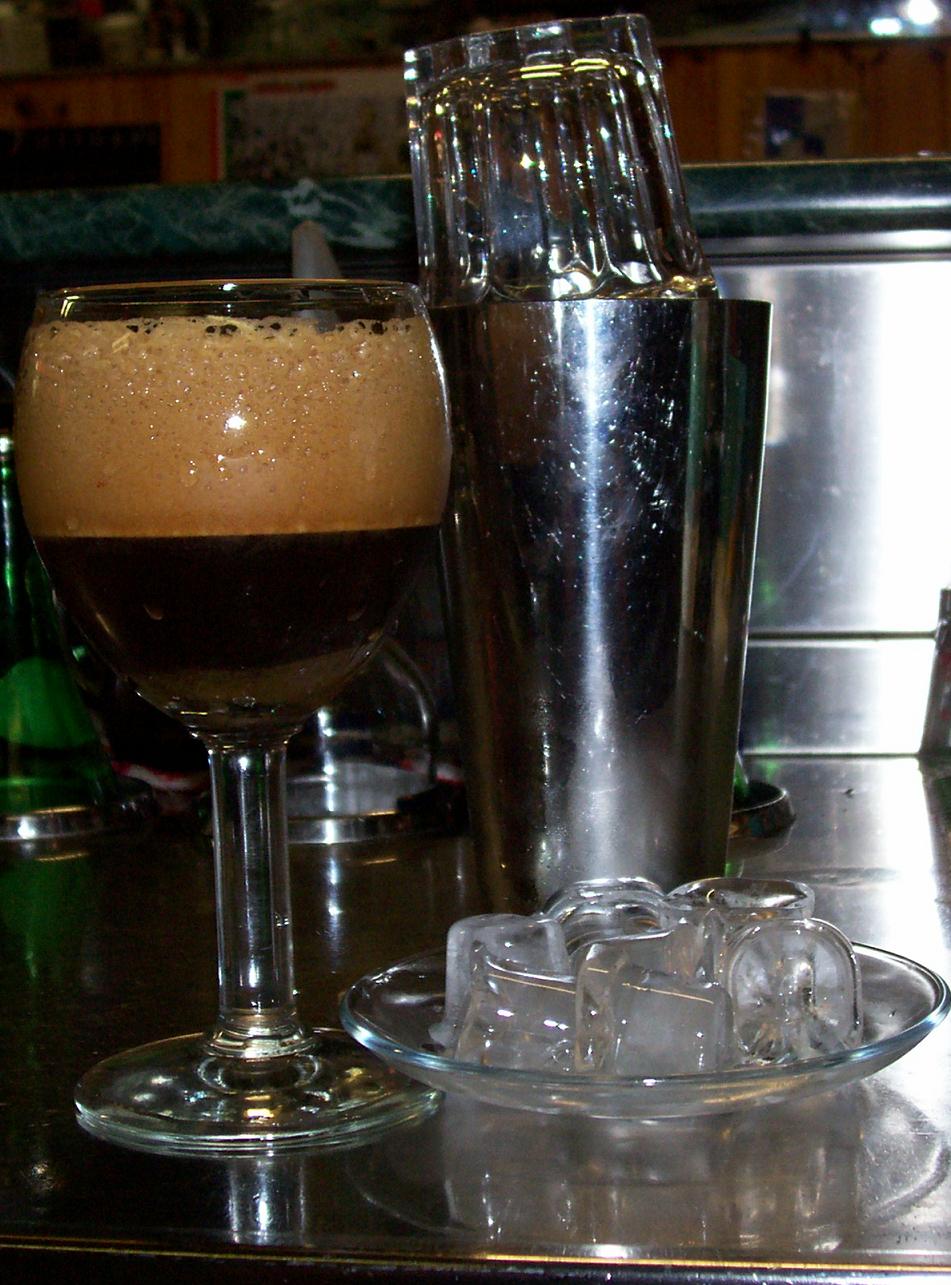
Italiano: foto di caffè Scheckerato. foto scattata da 'Burghy'. Pubblico dominio